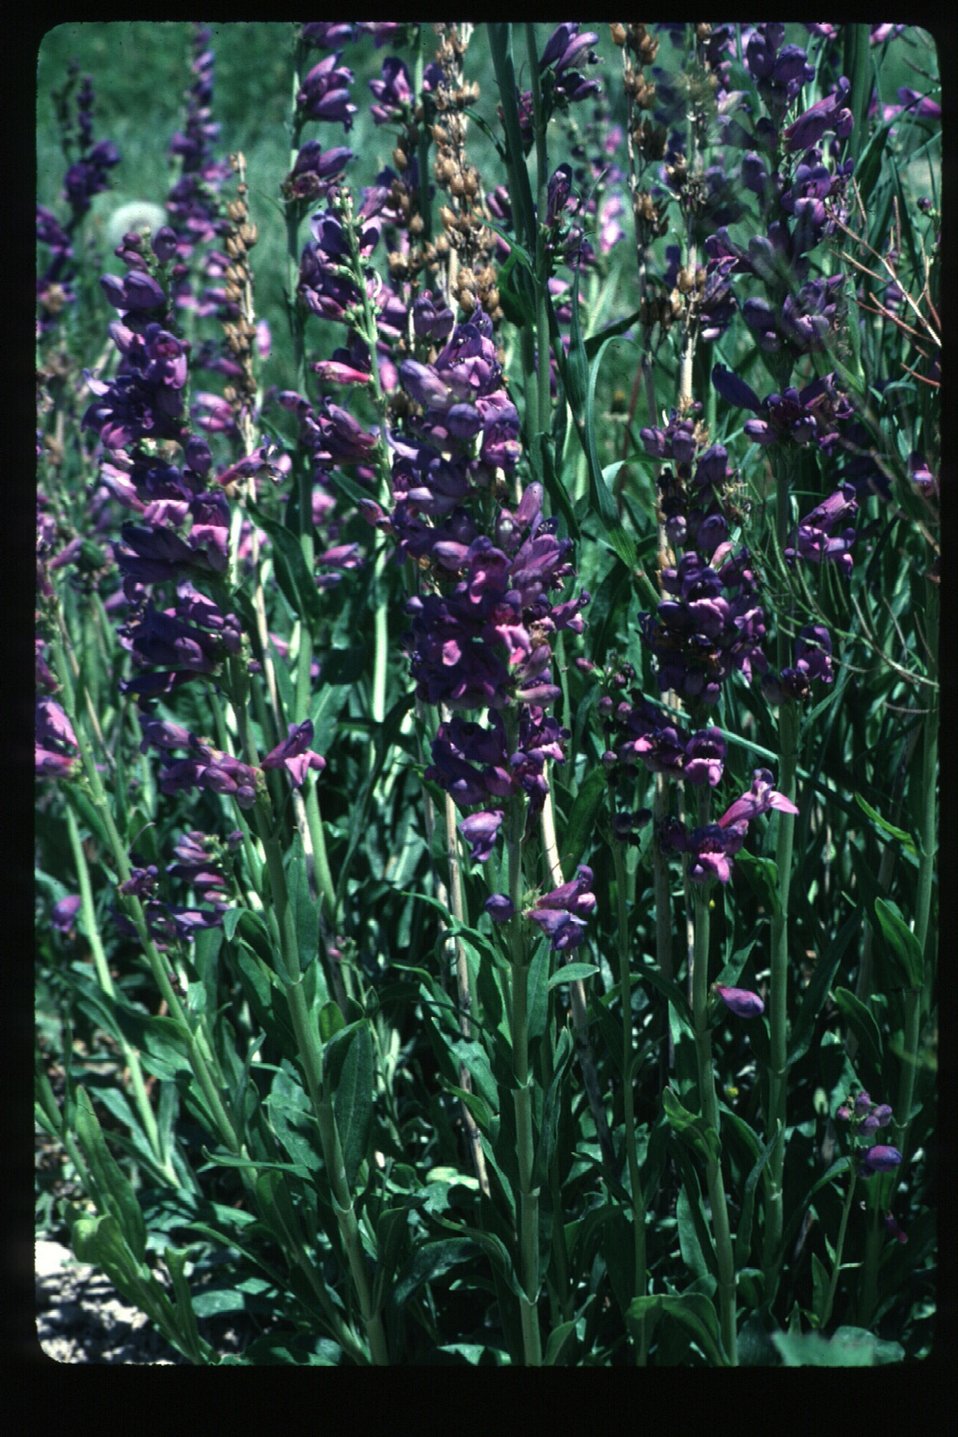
Minadoka panseton Brush, grasses Wildflowers